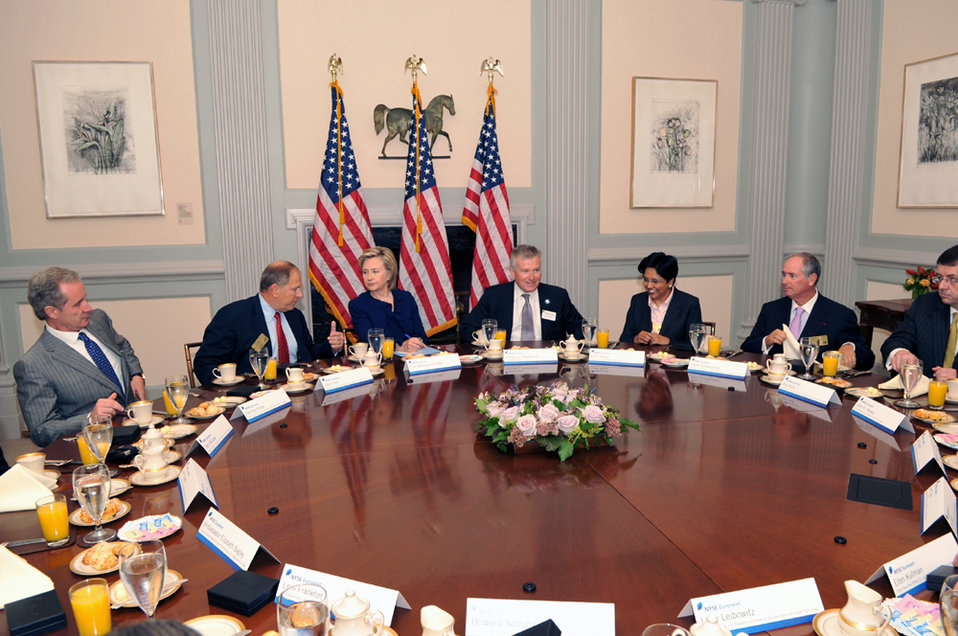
UNGA 2009: Secretary Clinton Meets With New York Stock Exchange CEO

U.S. Secretary of State Hillary Rodham Clinton meets with New York Stock Exchange (NYSE) Chief Executive Officer Duncan Niederauer at the NYSE during the 64th Session of the UN General Assembly in New York City, New York September 21, 2009.